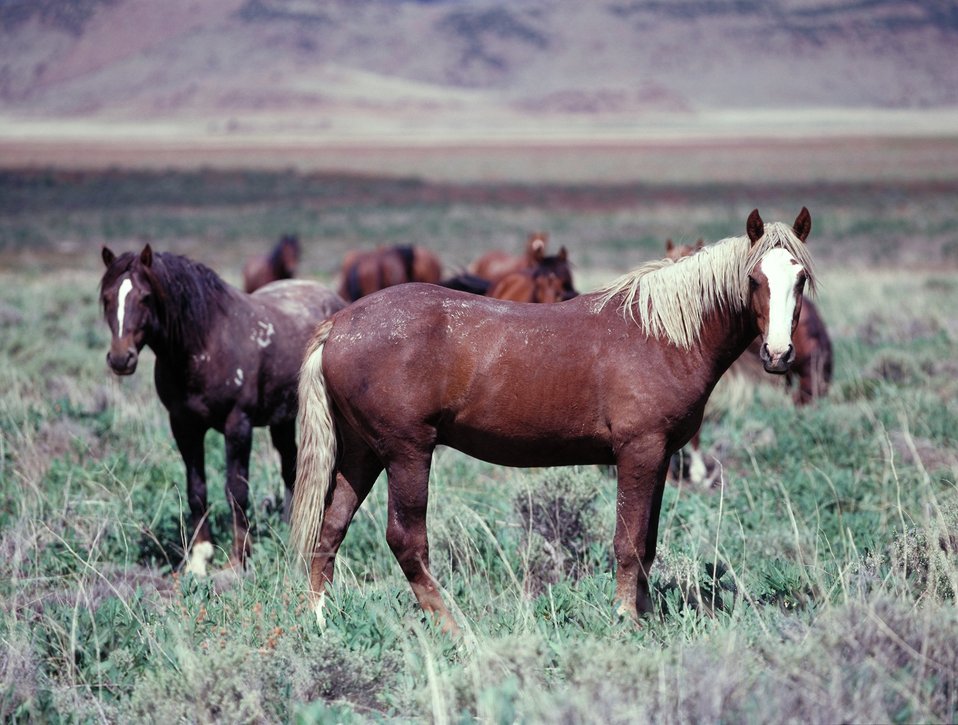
Onaqui Herd near Dugway, Utah.